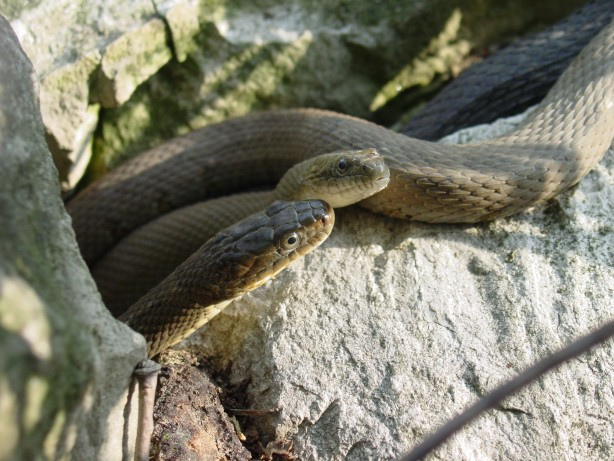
Recovered Lake Erie watersnake (Nerodia sipedon insularum)